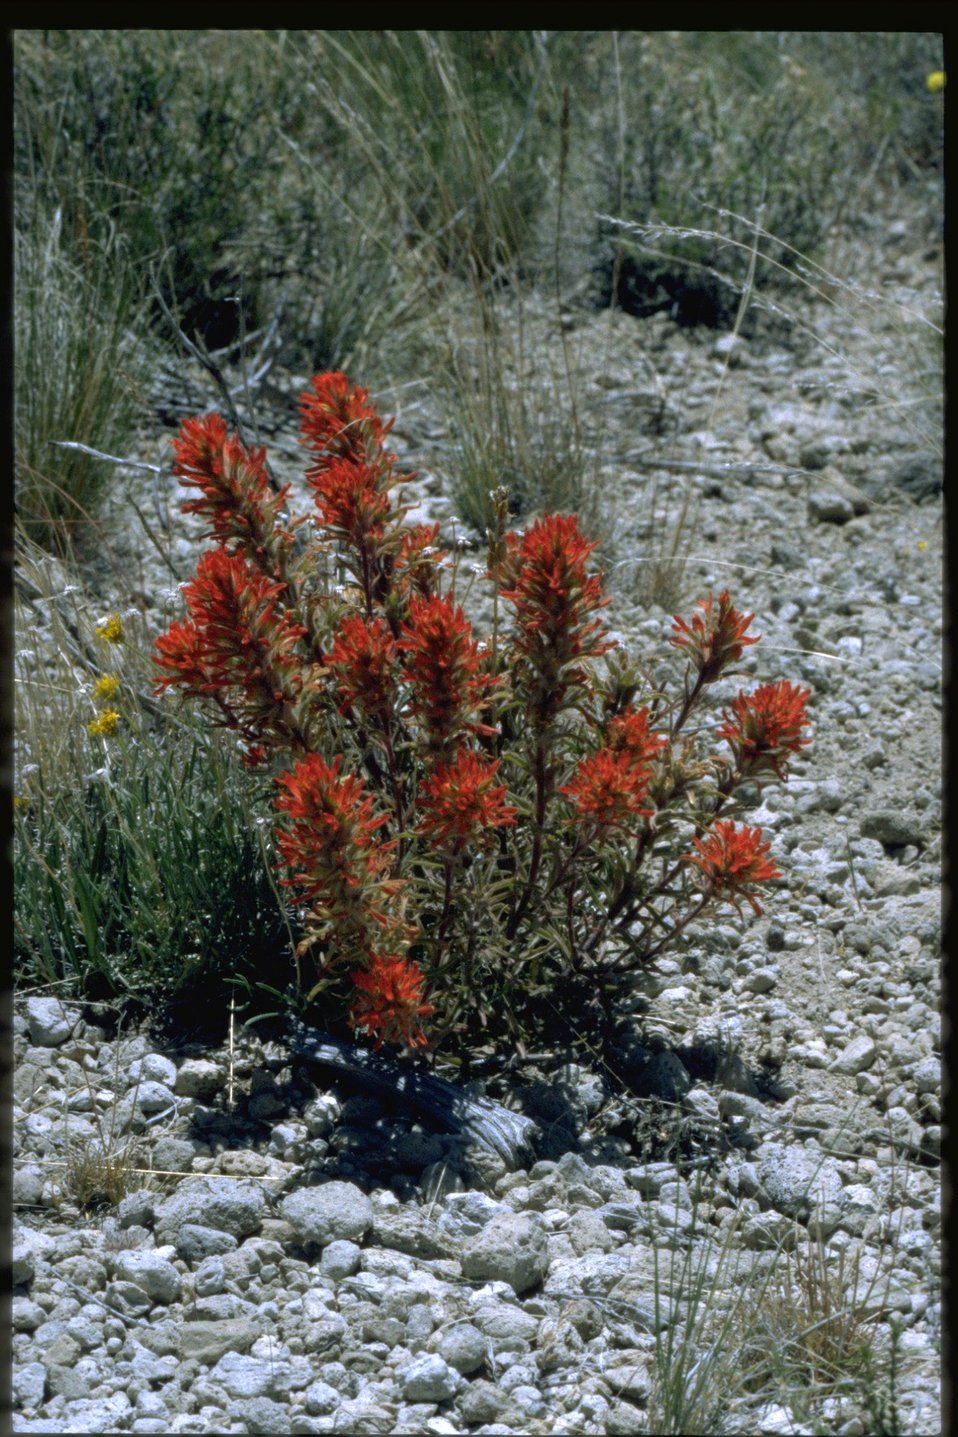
Medium shot of Indian Paintbrush habitat.